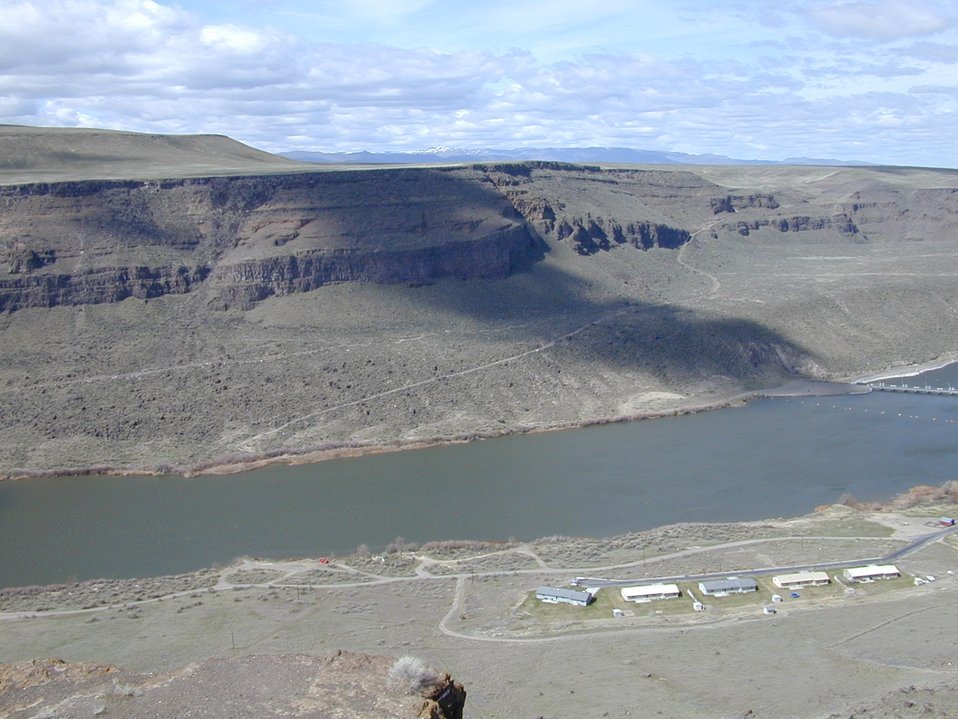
Scenic Snake River Birds of Prey National Conservation Area Lower Snake River District LSRD Snake River Canyon